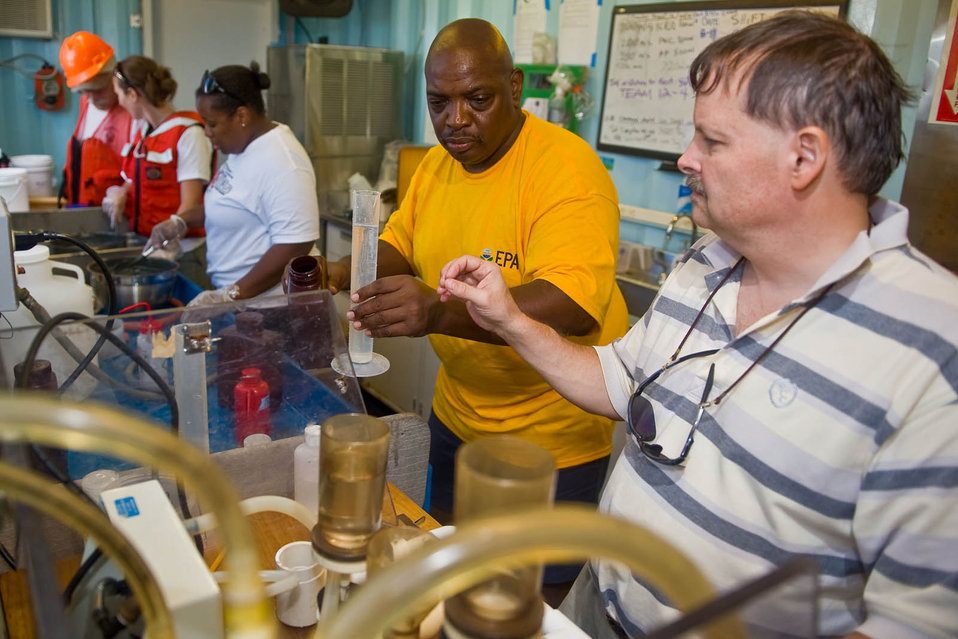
Processing water samples

A surface water sample is being passed through a filter to capture organisms for chlorophyll analysis. Rick Hoffman, Virginia Department of Environmental Quality in the foreground, Bill Early, Deputy Regional Administrator, EPA Region 3 assists.